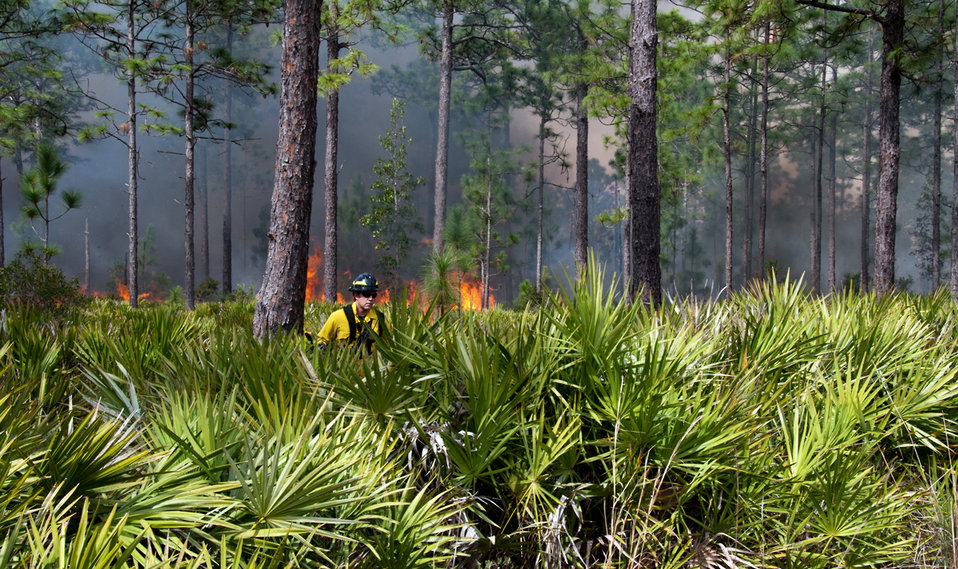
Lake Woodruff Volusia 5 Prescribed Fire Febuary 2014

On February, 12 2014 USFWS firefighters conducted a 137 acre prescribed fire at Lake Woodruff NWR to reduce the wildfire risk and enhance the wildlife habitat on the southern end of the refuge.